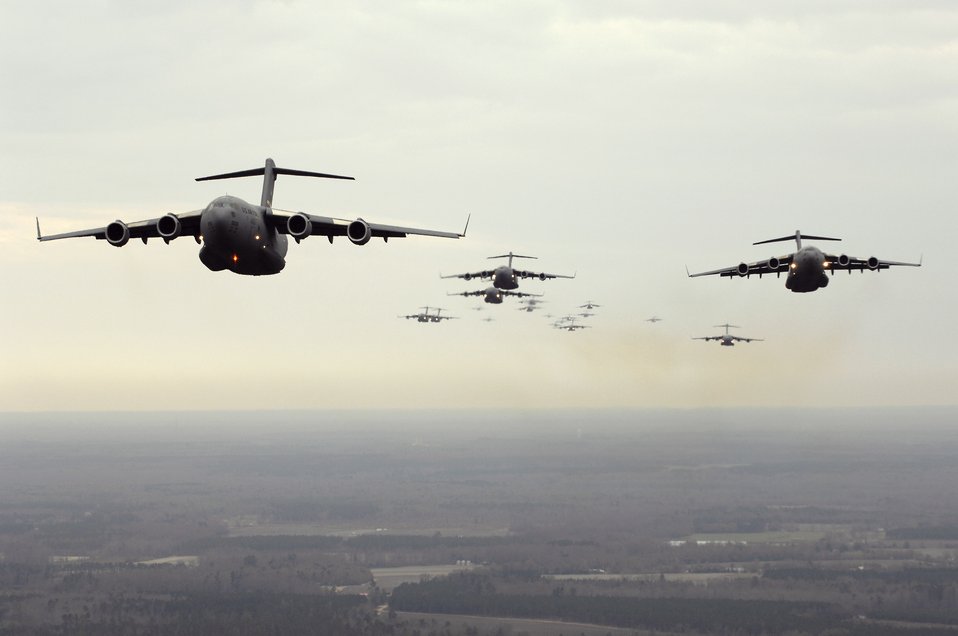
20 Charleston C-17s fill the sky

Twenty C-17 Globemaster IIIs participate in a Large Formation Exercise Dec. 21 over the coast of Charleston, S.C. The C-17s, assigned to the 437th and 315th Airlift Wings at Charleston AFB, were part of the largest formation in history from a single base and demonstrated the strategic airdrop capability of the Air Force.